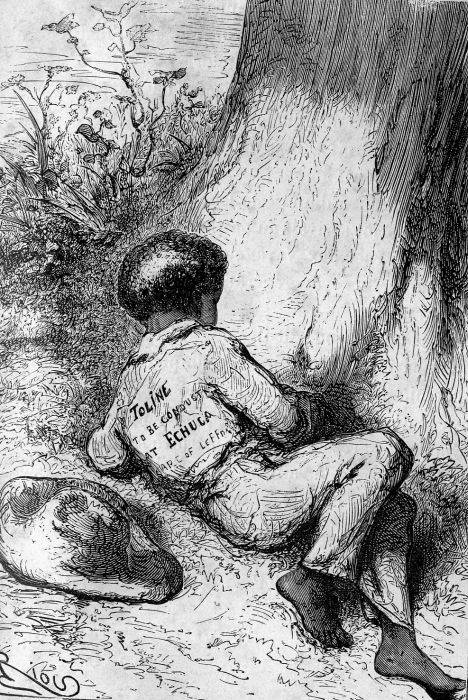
An ilustration from the novel 'In Search of the Castaways; or Captain Grant's Children' by Jules Verne drawn by Édouard Riou. Polski: Ilustracja powieści Juliusza Verne'a 'Dzieci kapitana Granta' autorstwa Édouarda Riou. Français : 'Les Enfants du capitaine Grant', Édouard Riou. Français : C’était le cadavre du garde.